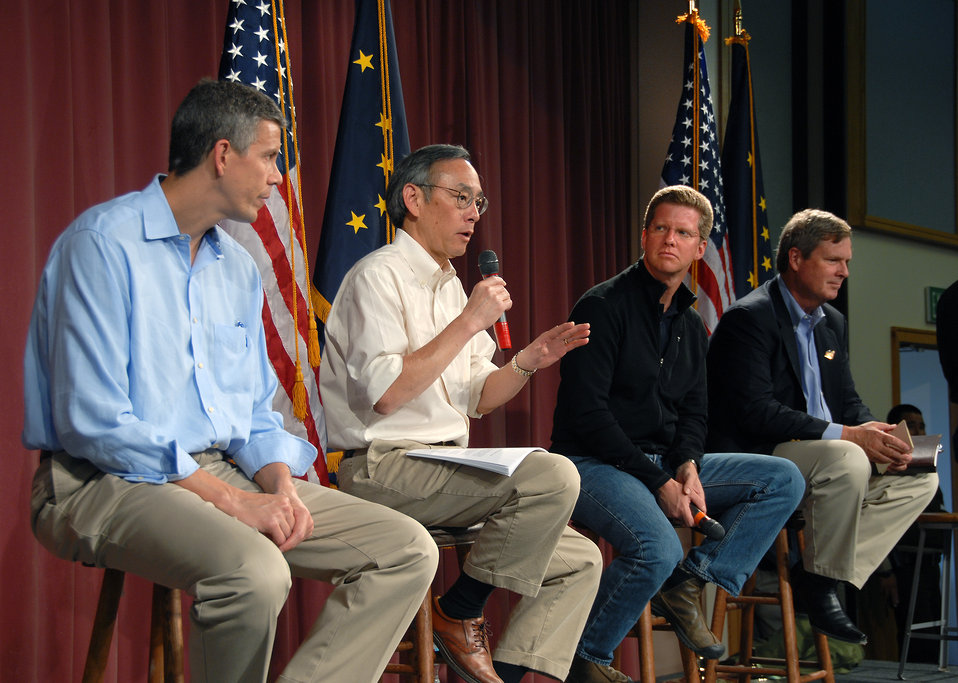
Rural Tour 0186

Rural Tour Alaska Aug 2009